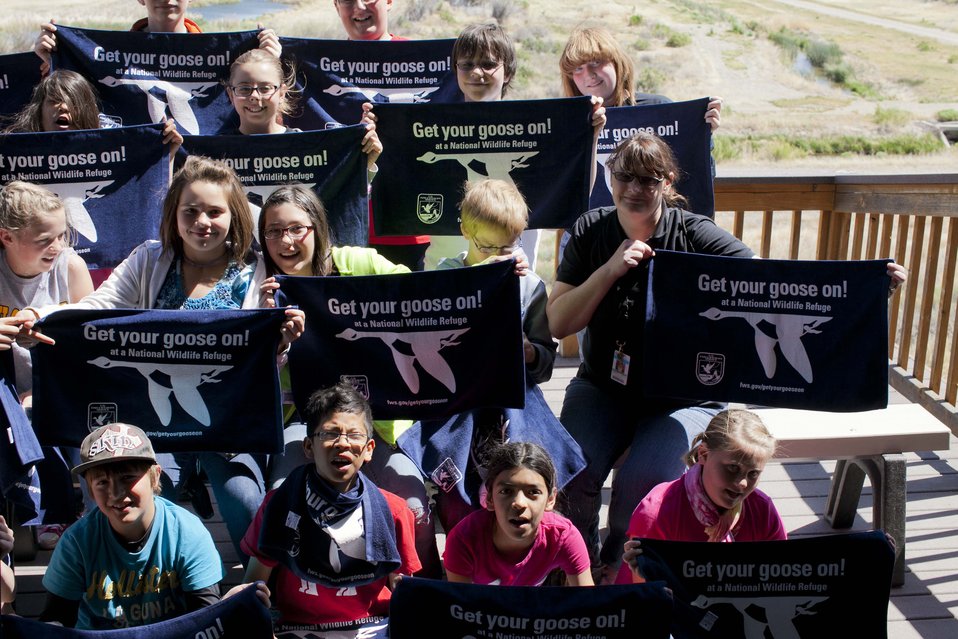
Get Your Goose On!

Sandi Morrison's Pilot Butte fifth graders posing on the Seedskadee NWR Environmental Education Center observation deck with 'Get your goose on!' Refuge towels.